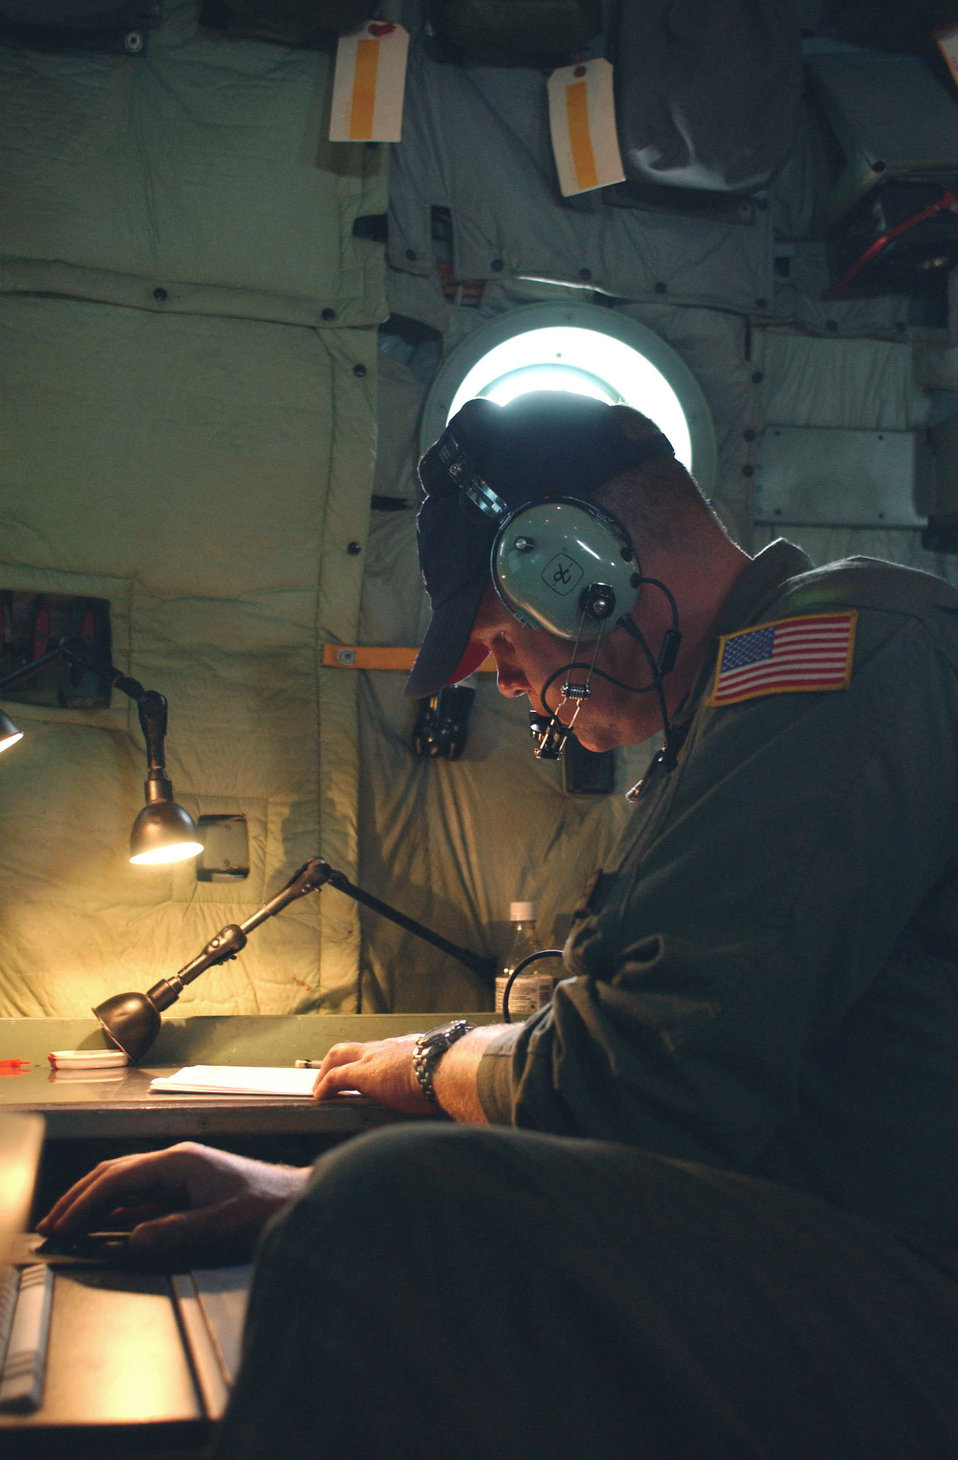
Hurricane Charley

OVER FLORIDA -- Staff Sgt. Scott Blair records weather data collected off the coast of Florida inside the eye of Hurricane Charley on Aug. 13. He is a dropsonde systems operator for the 53rd Weather Reconnaissance Squadron, better known as the